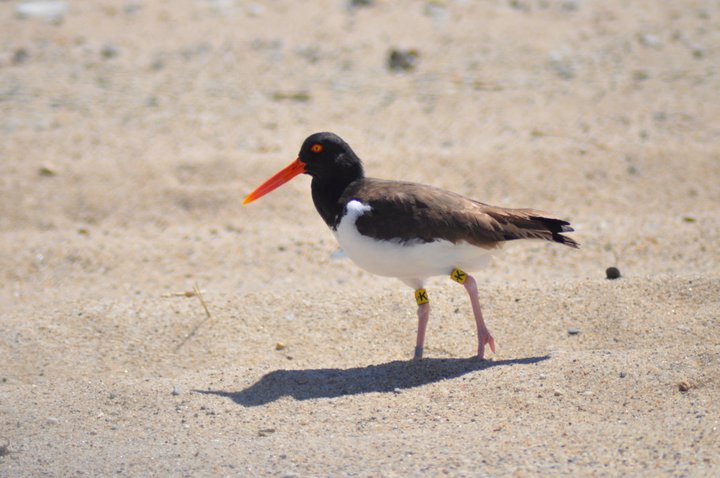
American Oystercatcher

An American oystercatcher at the Nantucket National Wildlife Refuge, MA.